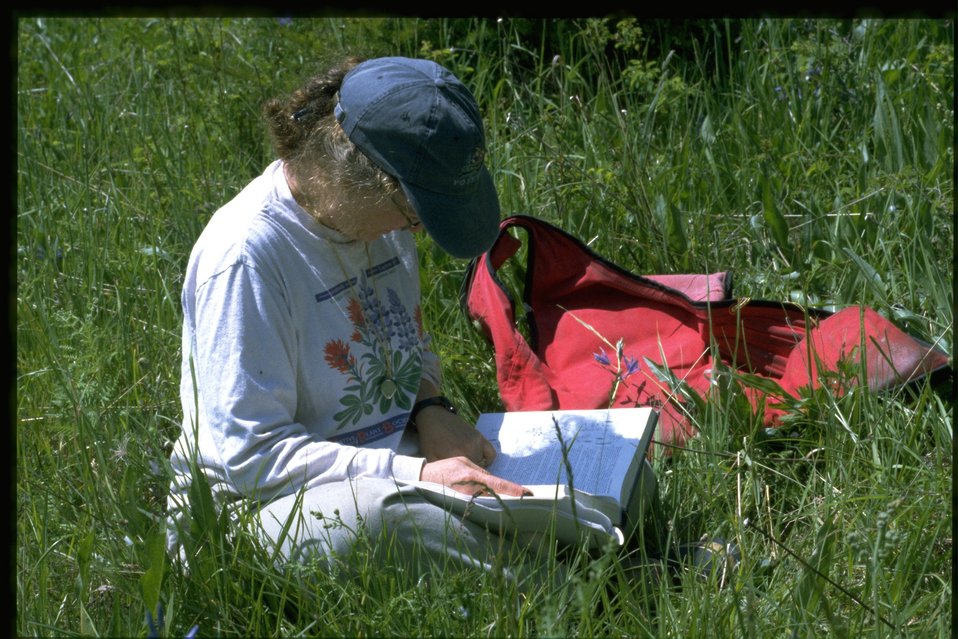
Cheshire Mayrsohn, Botanist in the McKenzie Resource Area, Eugene District.